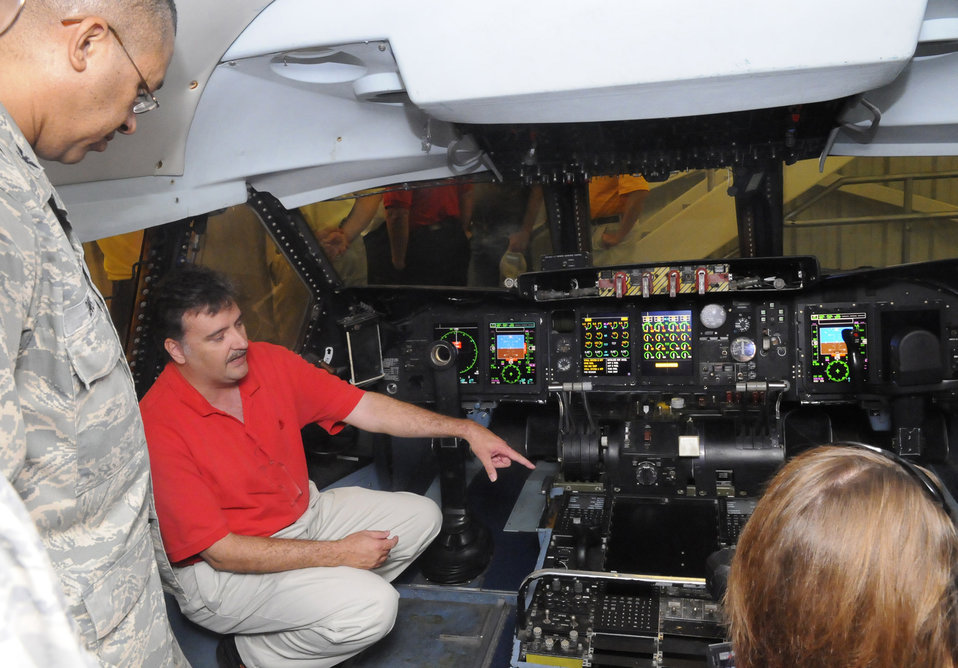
C-5 Galaxy cockpit

Todd Morris, an engineer with the 402nd Software Maintenance Group at Robins Air Force Base, Ga., tells visitors attending the opening of a new facility Sept. 10, 2010, about the C-5 Galaxy cockpit section housed there that will enable engineers to test software in a real environment without tying up actual C-5s. The cockpit section came from a C-5 that crashed at Dover AFB, Del., in 2006.